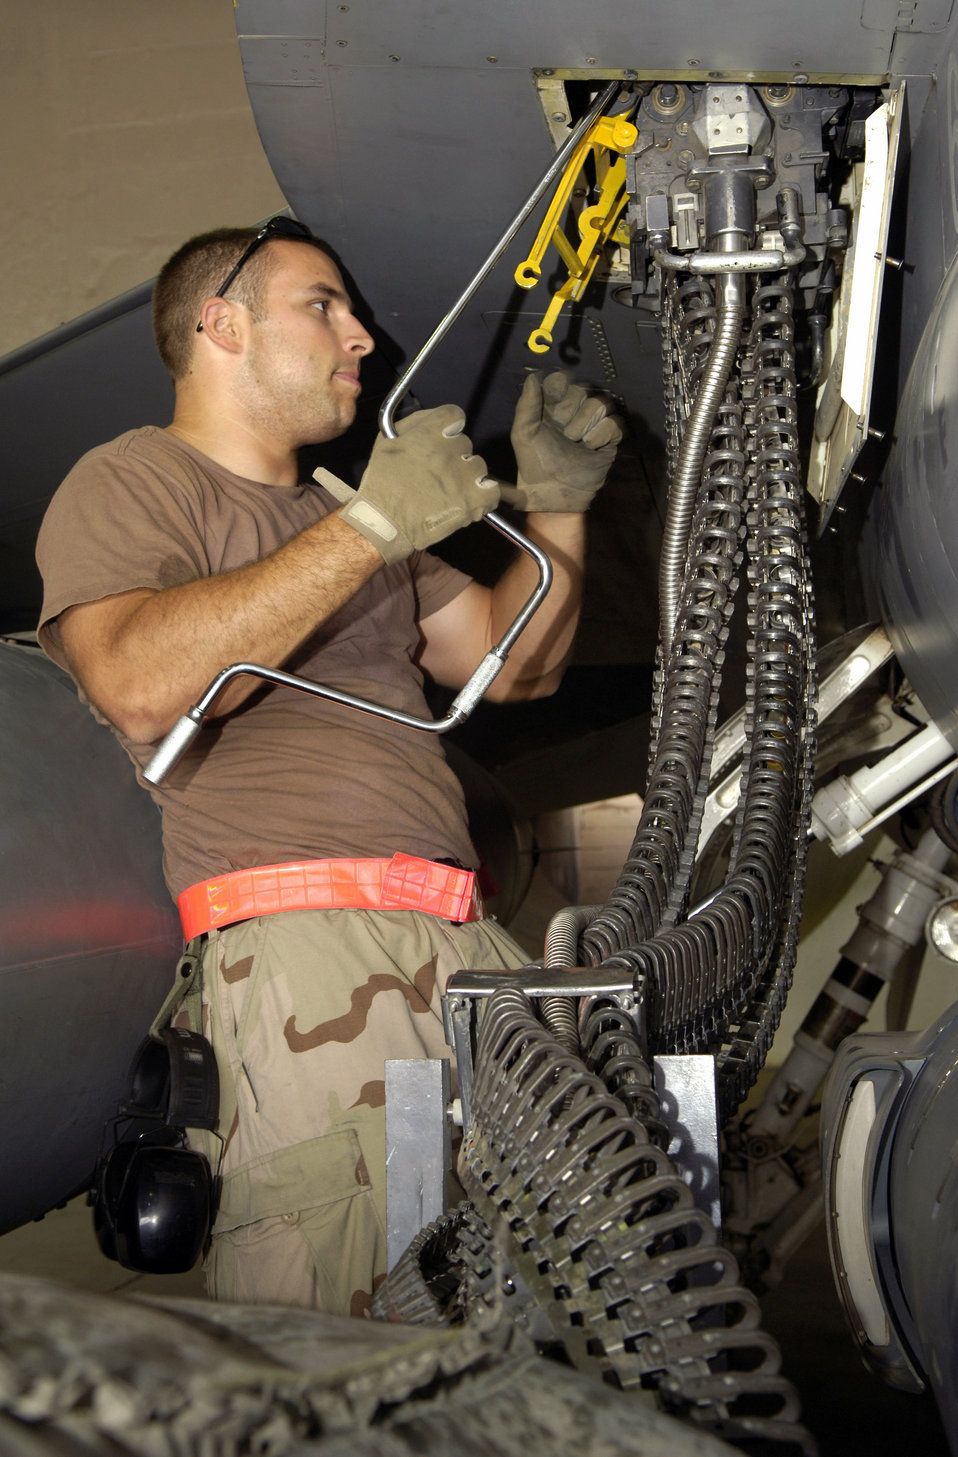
Making things safer

Senior Airman Zachary Eason, a weapons mechanic for the 332nd Expeditionary Aircraft Maintenance Squadron at Balad Air Base, Iraq, removes 20 mm rounds from an F-16 Fighting Falcon. Removing munitions from the aircraft helps maintainers prevent accidents and safely accomplish the mission.